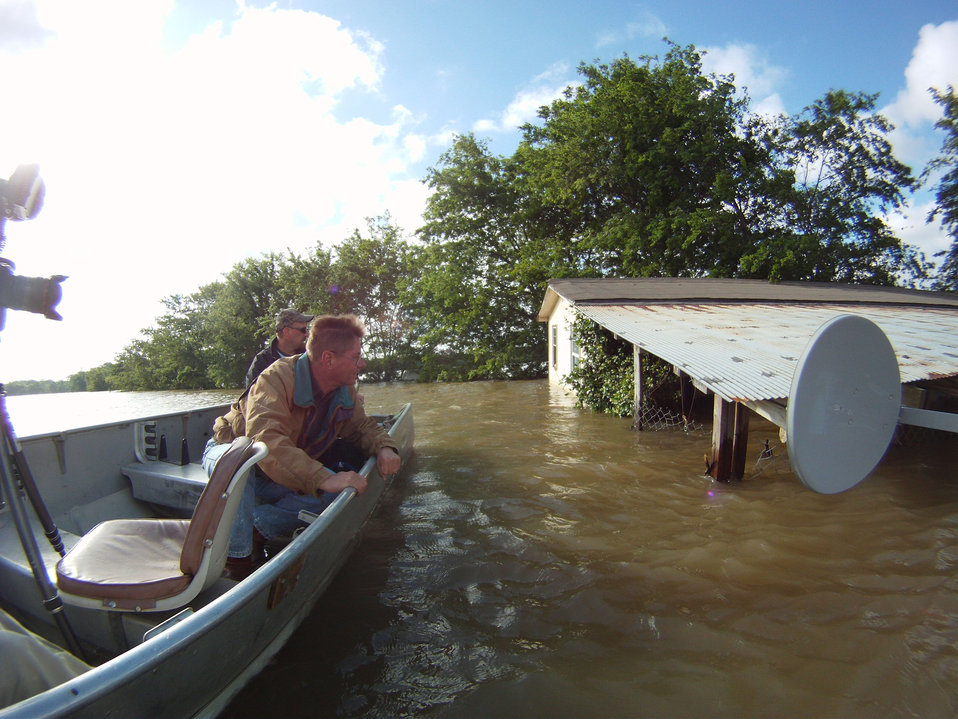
Joe Higdon found his white ranch house pushed against the tree line of his property on President's Island that remains submerged in 6-12 feet of flood waters from the Mississippi River floods on President’s Island near Memphis, TN, on Sunday, May 15. 2011.